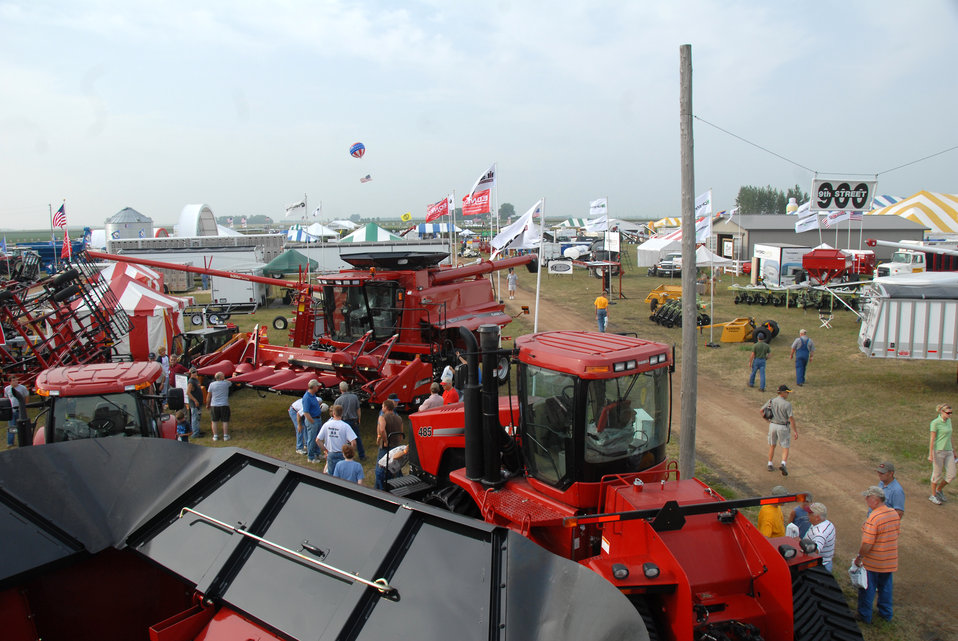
Tractors, loaders, tillage equipment and other types of agricultural farm machinery are displayed at the Minnesota Farmfest in Redwood County, Minnesota on August 7, 2007. Farmfest is one of the largest agricultural events in the world and it brings the best products and services to an audience that is drawn from every Minnesota County and has many visitors from five neighboring states.